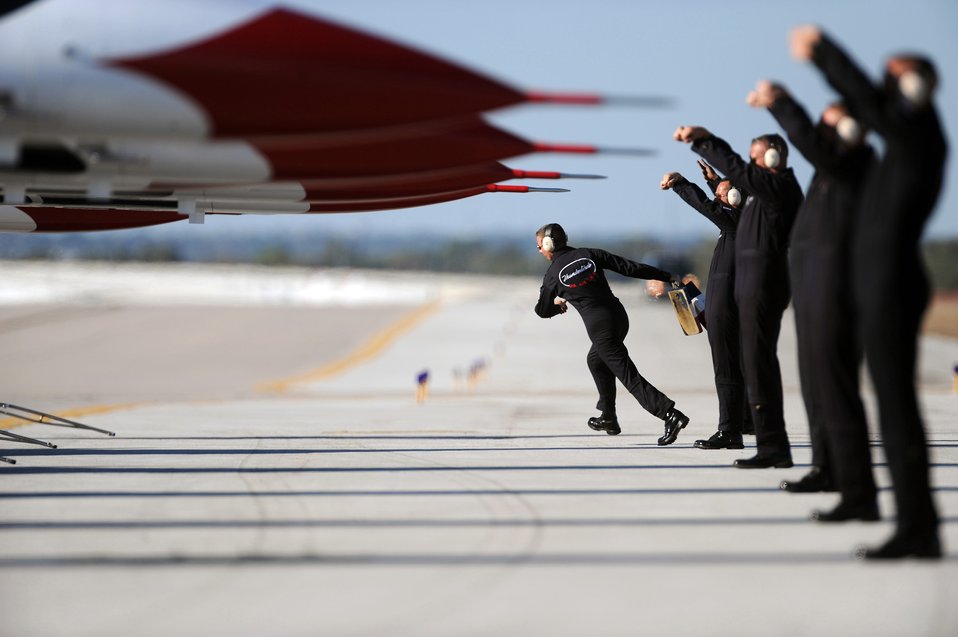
I'm ready

Staff Sgt. Brandon Bingham, the assistant dedicated crew chief for Thunderbird 5, steps out to chock his jet following their aerial demonstration at the AirFest 2010 Nov. 7, 2010, at Lackland Air Force Base, Texas.